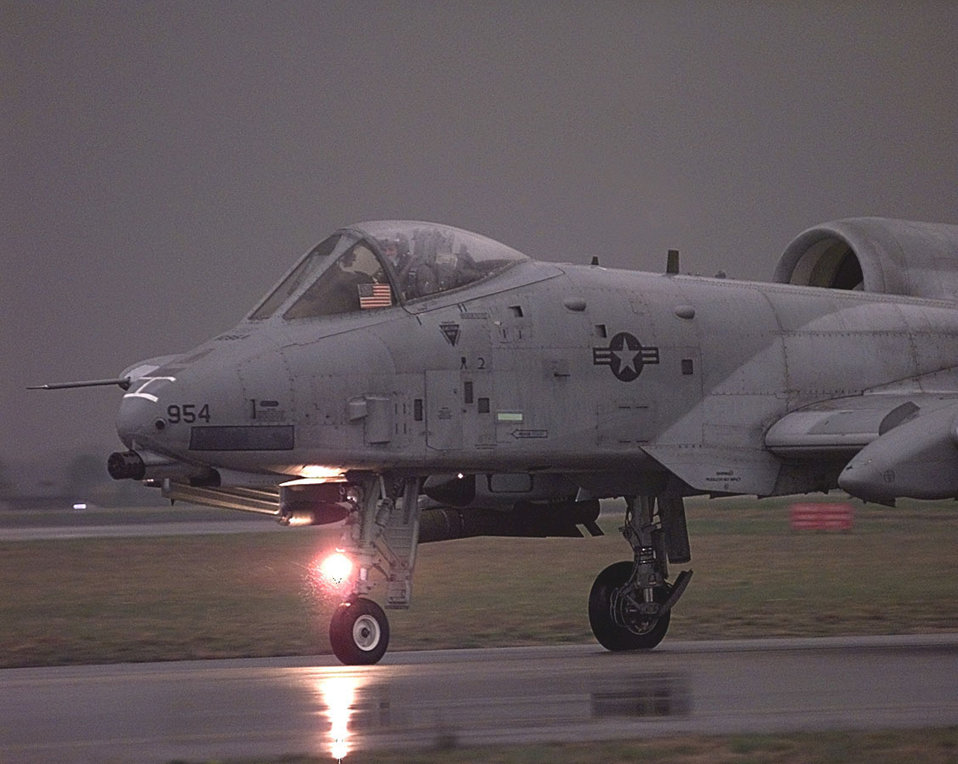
A-10

1990's -- An A-10 Thunderbolt II takes off on a mission against targets in Yugoslavia. The A-10 and OA-10 Thunderbolt IIs are the first Air Force aircraft specially designed for close air support of ground forces. They are simple, effective and survivable twin-engine jet aircraft that can be used against all ground targets, including tanks and other armored vehicles.